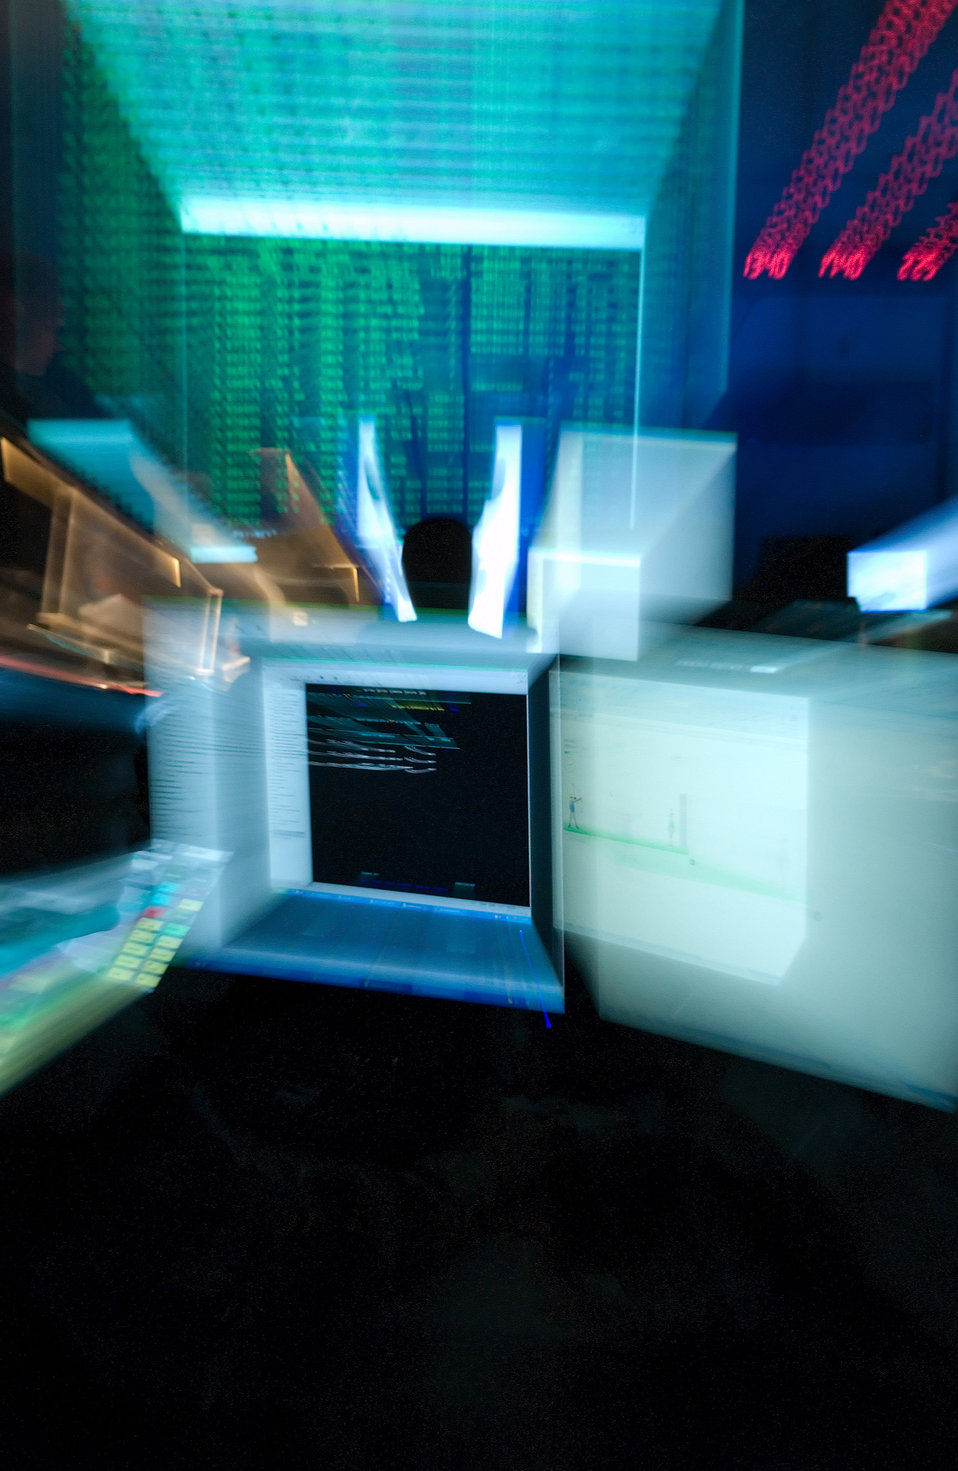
Command post keeps gears turning on global mobility

The 436th Airlift Wing command post at Dover Air Force Base, Del., is packed with computer and projection screens where controllers track aircraft, accommodate aircrew needs and coordinate emergency management.